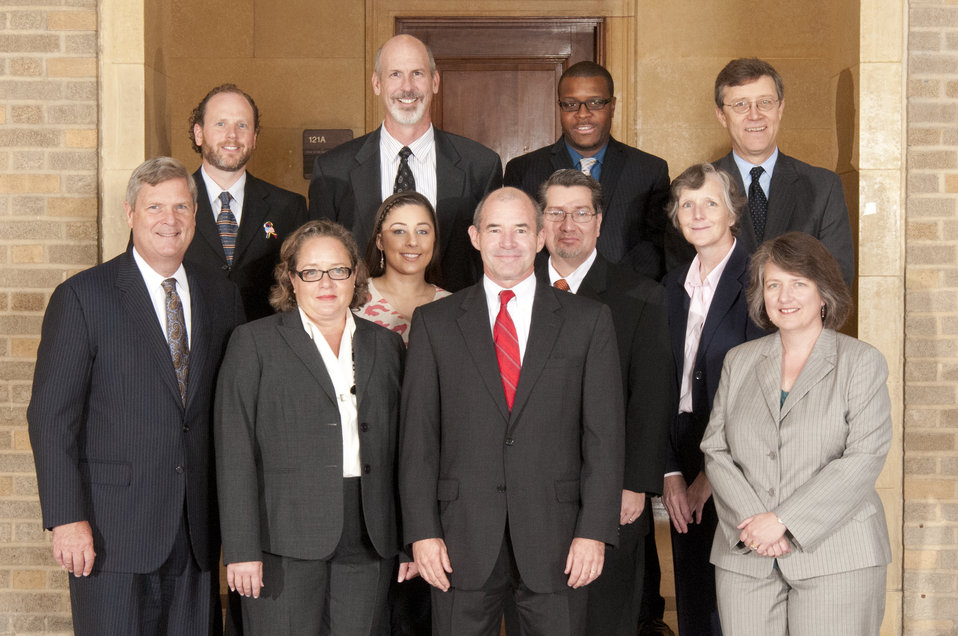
Agriculture Secretary Tom Vilsack and Deputy Agriculture Secretary Kathleen Merrigan with Honor Award Group Fruit and Vegetable Program Webinar Team, Agricultural Marketing Service (AMS) on the patio of the U.S. Department of Agriculture in Washington, D.C. on Wednesday, Sept. 12, 2012. The AMS Fruit and Vegetable Program Webinar Team developed and delivered an educational webinar series that helps small and socially disadvantaged fruit and vegetable farmers and others thrive economically.